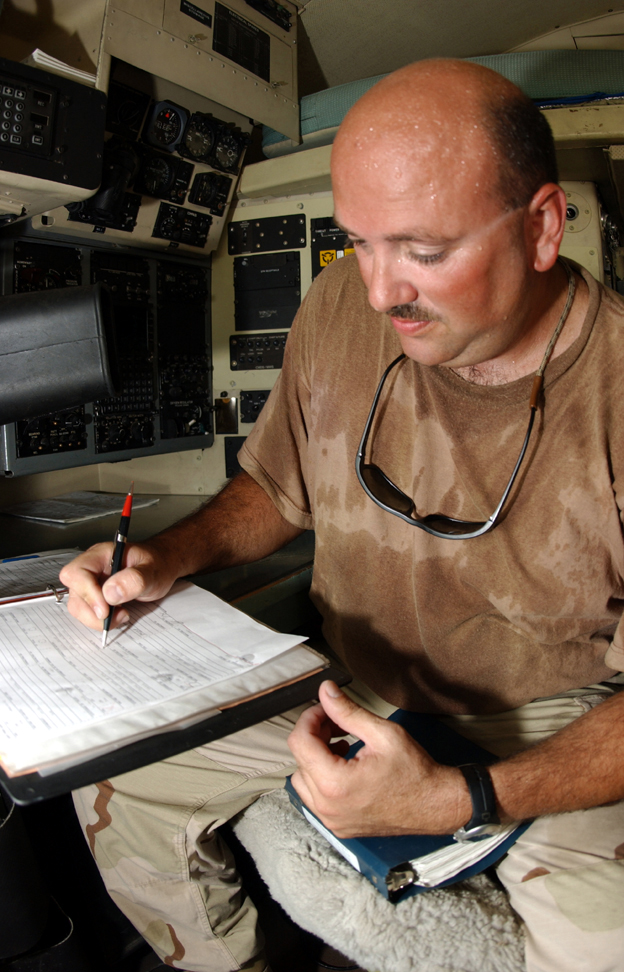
Nose job

OPERATION IRAQI FREEDOM -- Staff Sgt. Malcolm Harward completes paperwork after replacing an aircraft nose radome on a C-130 Hercules. The old one was damaged by lightning. Harward is a crew chief with the Delaware Air National Guard's 166th Airlift Wing. Airmen endure temperatures of at least 115 degrees daily on the flightline at their forward-deployed location in Southwest Asia.